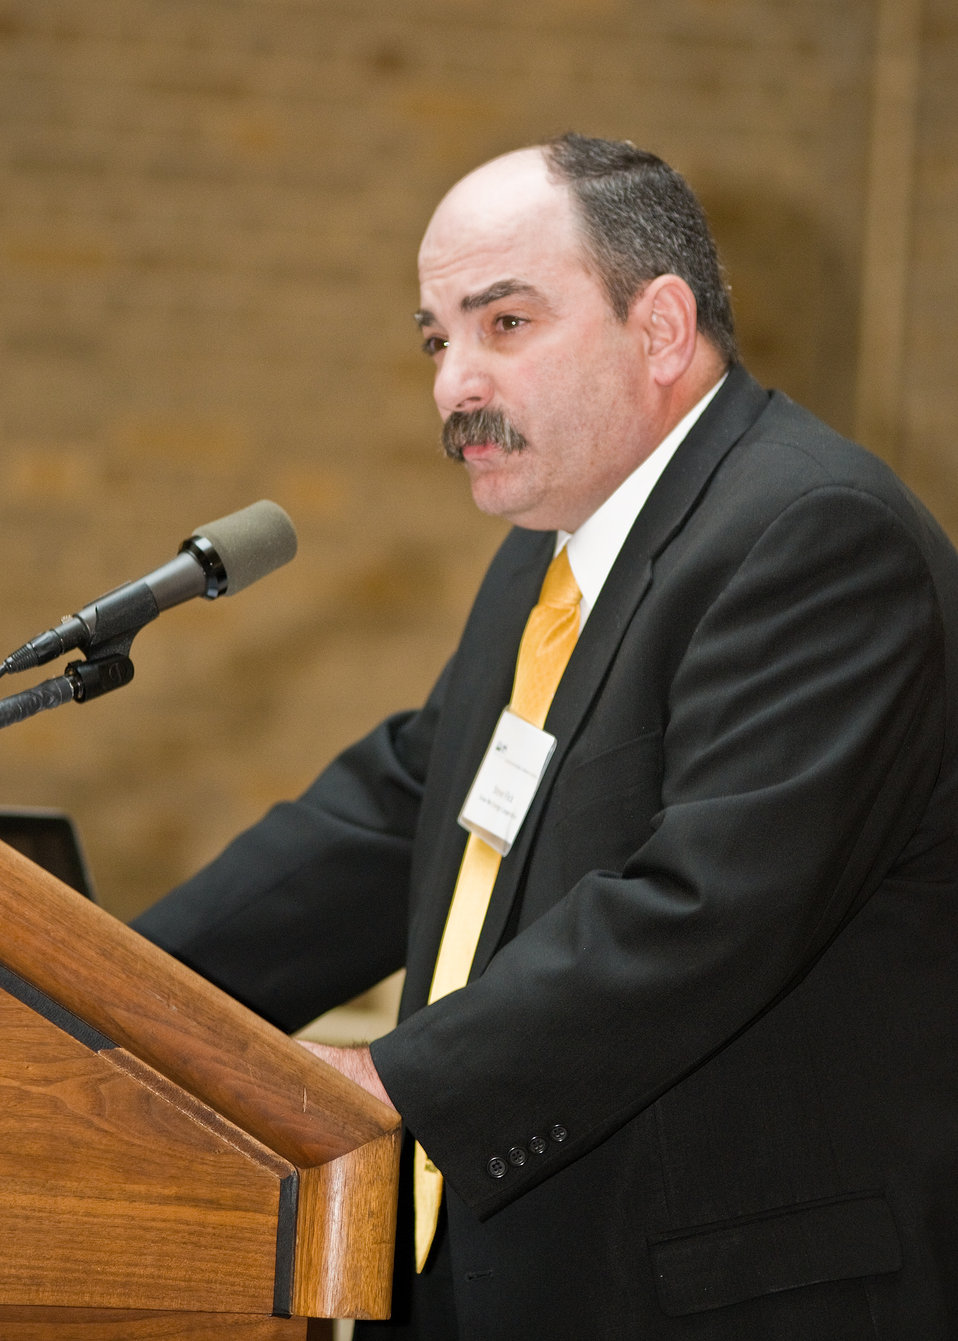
Steve Flick, Board President, Show Me Energy Cooperative explained the farmer owned and operated biomass fuel cooperative heating homes and farms and offering utility and generating alternative energy opportunities in rural Missouri during the celebration of October as National Co-op Month at an event at the Department of Agriculture, Tuesday, October 5, 2010 in Washington, DC. USDA Photo 10di1517-50 by Bob Nichols.